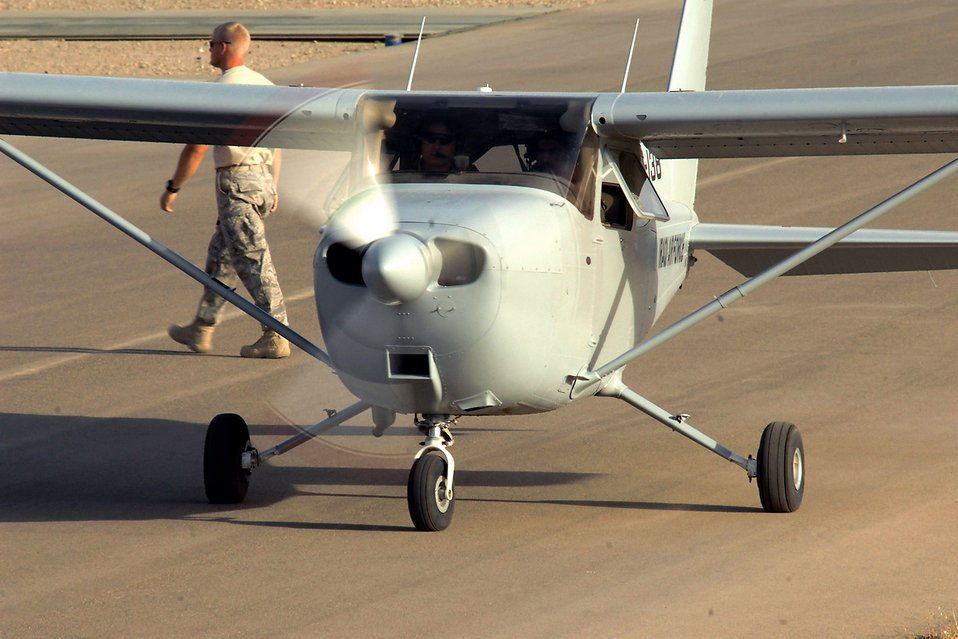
Iraqi air force reaches 2,000-hour milestone

Capt. Jamie Riddle, a 52nd Expeditionary Flying Training Squadron instructor pilot, and 2nd Lt.